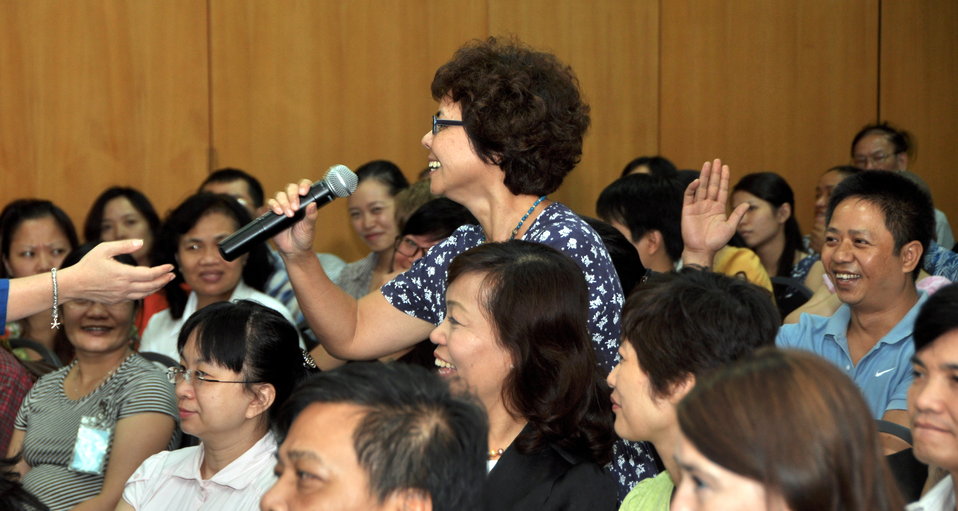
Development Grants Program Workshop in Hanoi

July 24, 2013